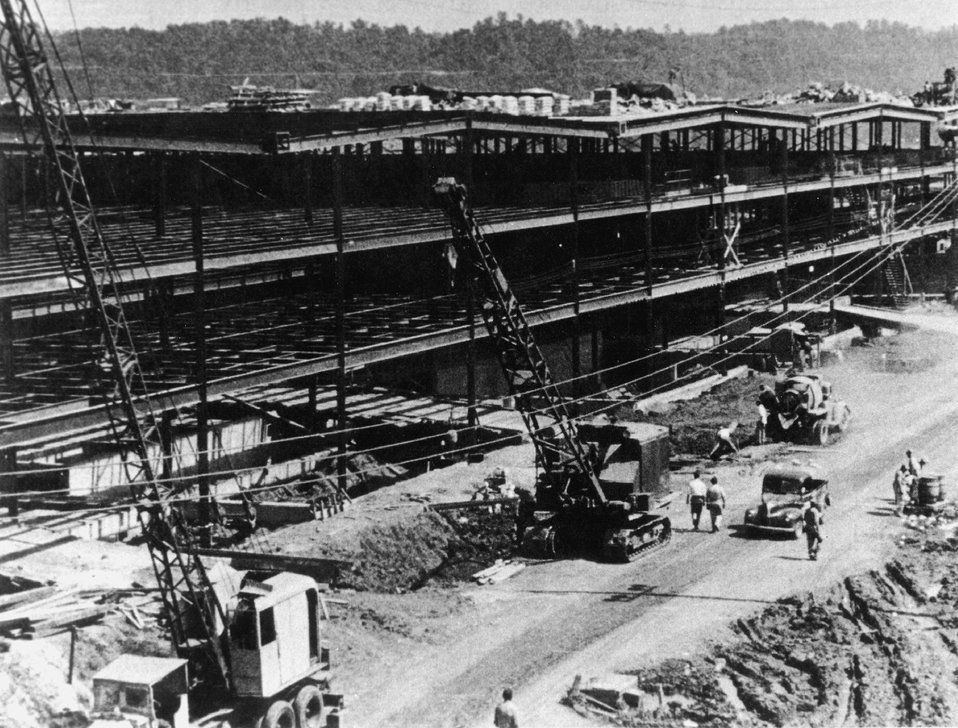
The gaseous diffusion plant, designed by the Kellex Corporation, bore the name K-25. c. undated